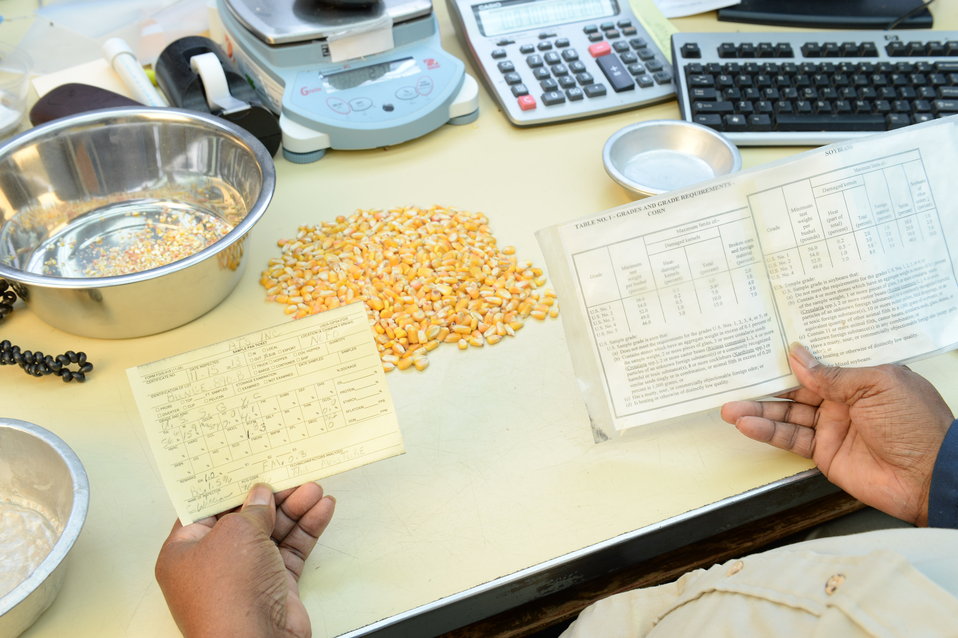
A U.S. Department of Agriculture (USDA) Grain Inspection, Packers and Stockyards Administration (GIPSA) Federal Grain Inspection Service (FGIS) scientist tests corn at the FGIS inspection laboratory in New Orleans, LA on Monday, Nov. 18, 2013.